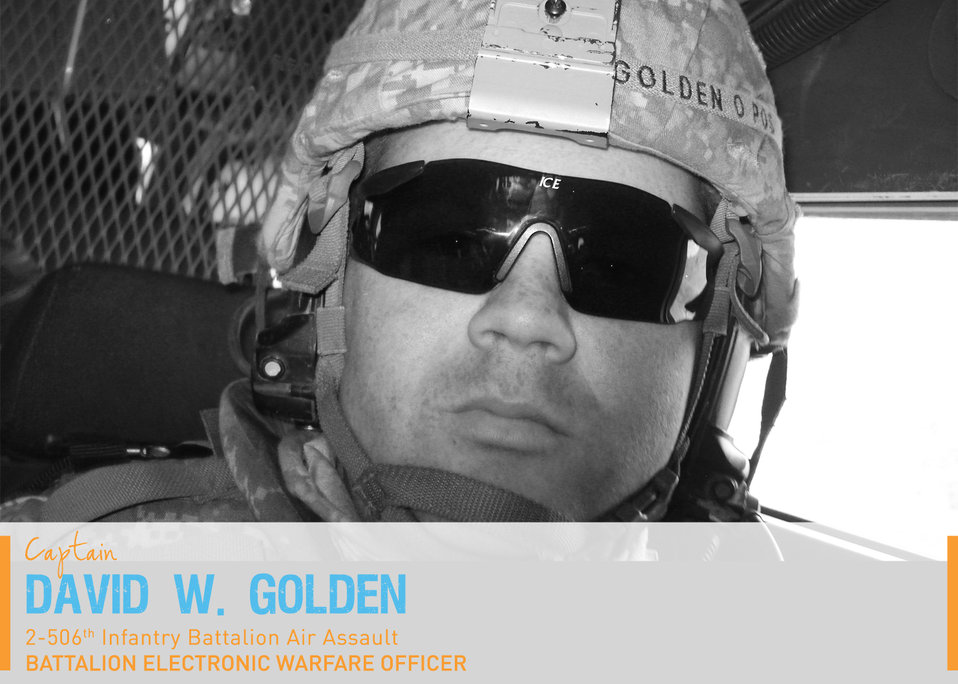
Portraits in Courage Vol 4: Capt. David Golden, Battalion Electronic Warfare Officer, 2-506th Infantry Battalion Air Assault.He maintained counter-radio controlled IED electronic warfare equipment on more than 250 vehicles. Traveling outside the wire to maintain the equipment, he battled ambushes and IEDs. His convoy was attacked in one mission, he returned fire. Running out of ammunition, he had to switch with multiple weapons to provide protective fire for his team.